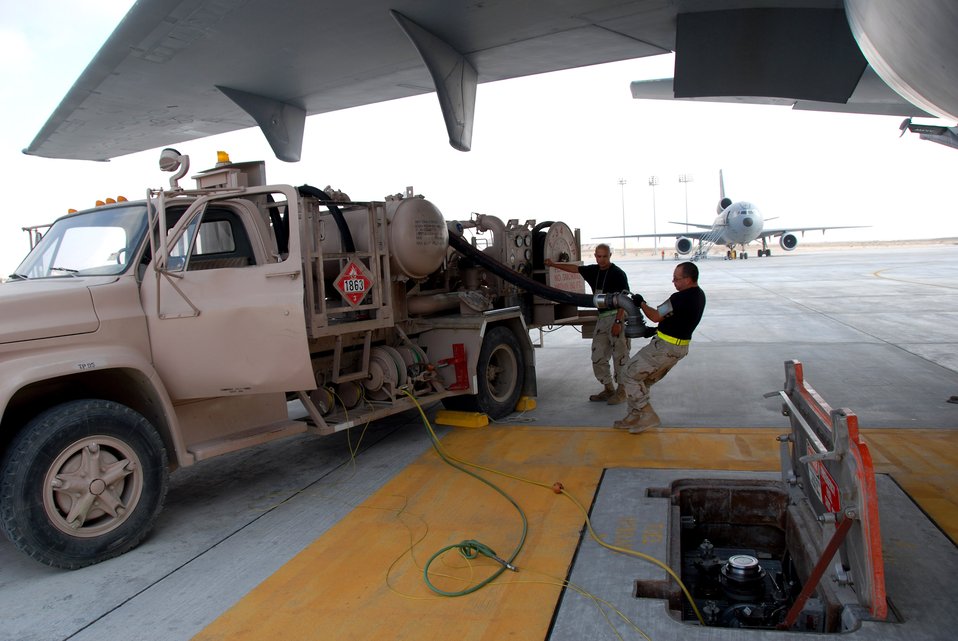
Keeping the fuel flowing

Staff Sgt. Michael Smith hauls a fuel hose off a truck under the wing of a KC-10 Extender Dec. 19 as another Airmen watches. Sergeant Smith prepared to fuel the aircraft, which can hold about 56,000 gallons of gas. The aircraft and Airmen here are part of the largest air-refueling unit in Southwest Asia, providing round-the-clock operations for Operations Enduring and Iraqi Freedom.